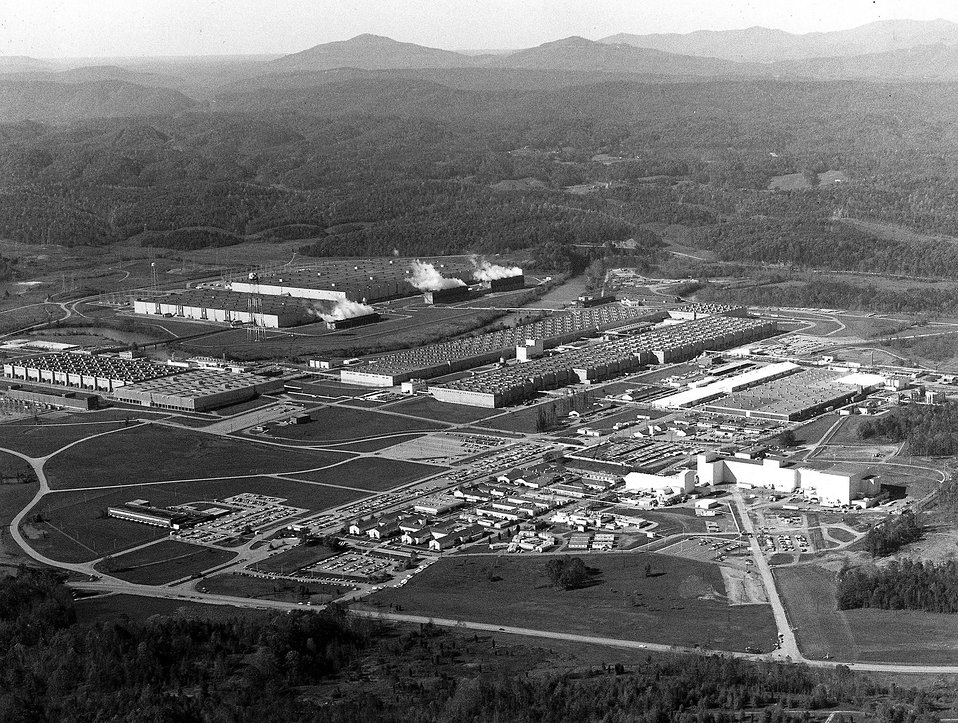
The Energy Research and Development Administration's Oak Ridge (Tenn.) Gaseous Diffusion Plant is the first such facility built in the world for the production of enriched uranium.